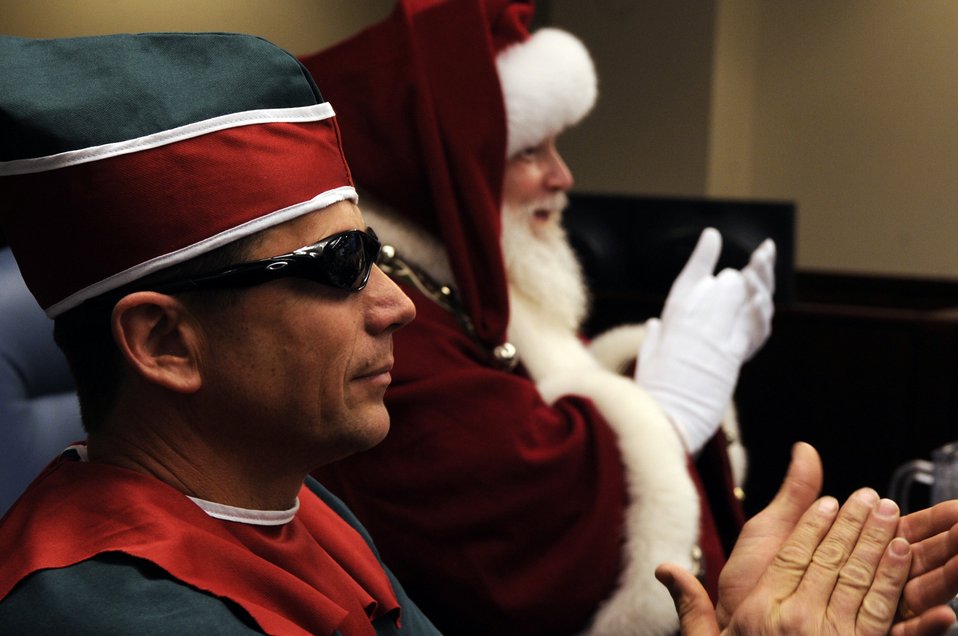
Santa Claus is coming to town

Santa Claus and Elf Dee make a surprise visit to the North American Aerospace Defense Command Tracks Santa Battle Cab Dec. 23 at Peterson Air Force Base, Colo. Santa received Federal Aviation Administration, weather and air mission briefs.